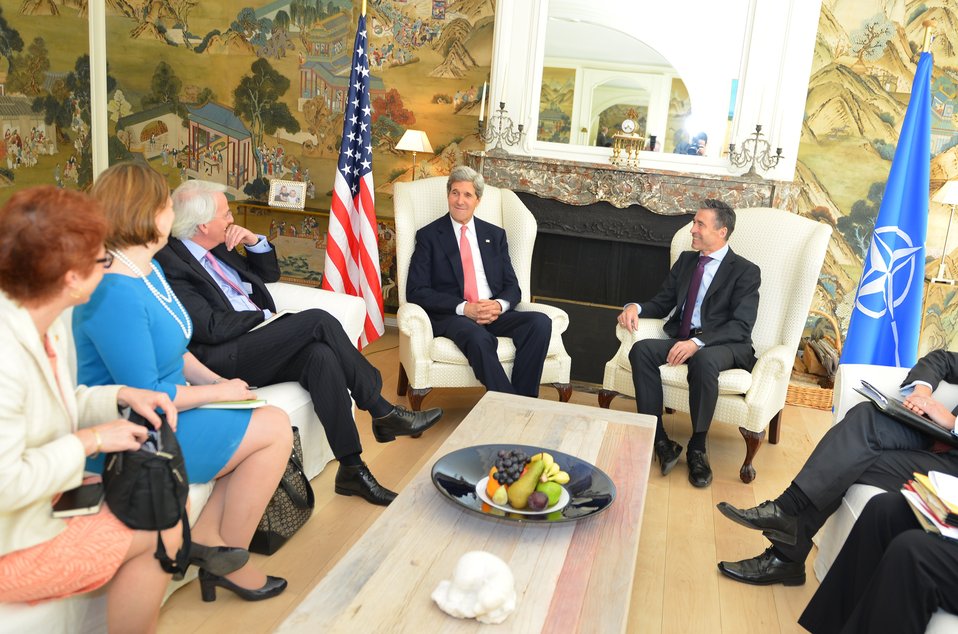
Secretary Kerry Meets With NATO Secretary General Rasmussen

U.S. Secretary of State John Kerry meets with NATO Secretary General Anders Fogh Rasmussen in Brussels, Belgium, on April 22, 2013.